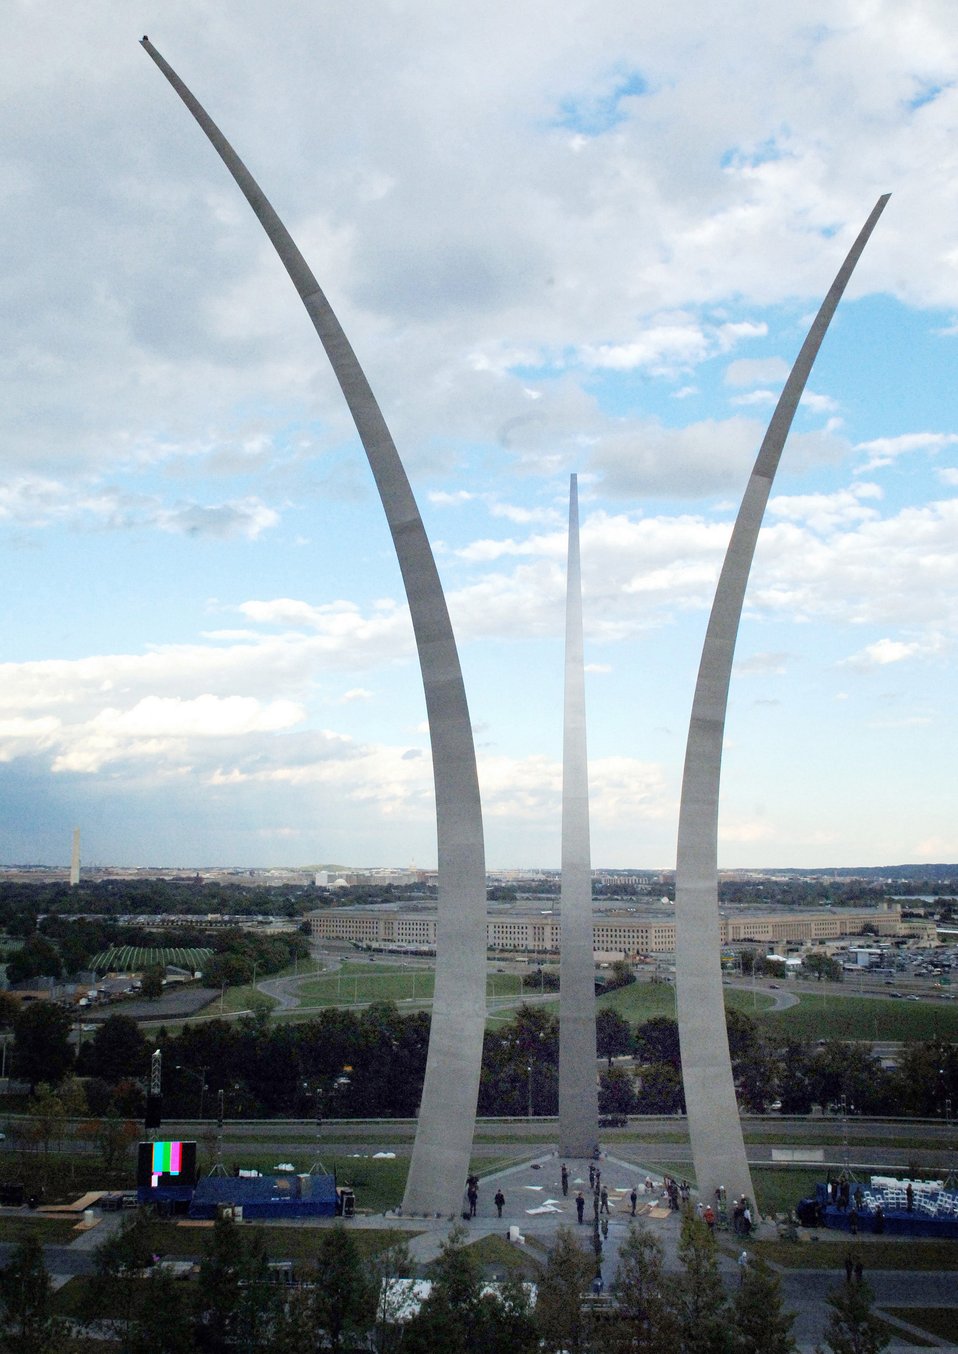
U.S. Air Force Memorial

Final preperations go on for the dedication of the United States Air Force Memorial, in Arlington, Va., on Oct. 12. The Memorial's dedication ceremony takes place on Oct. 14.